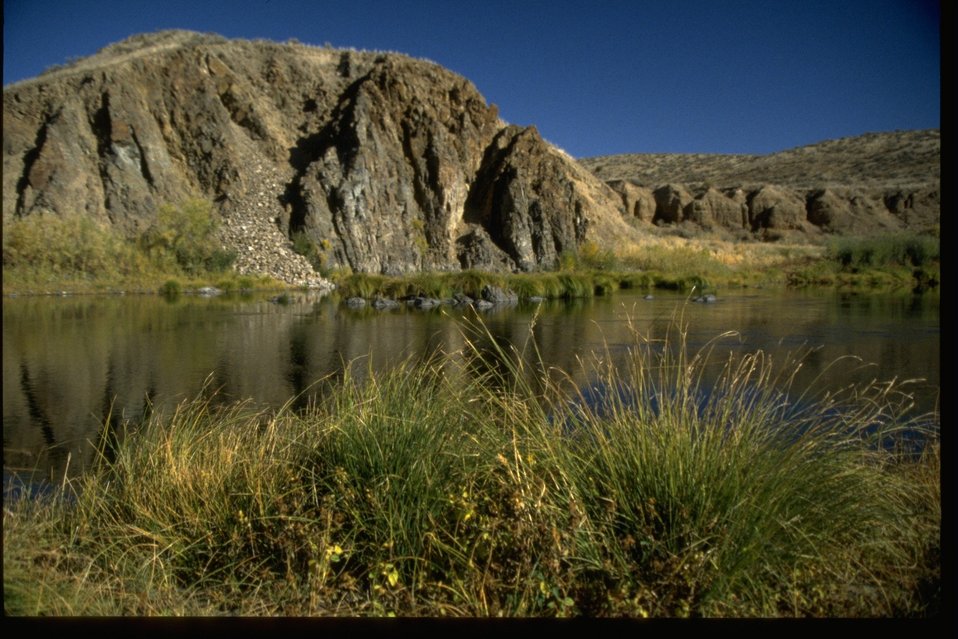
Riparian vegetation along the bank of the John Day River, near Bridge Creek.